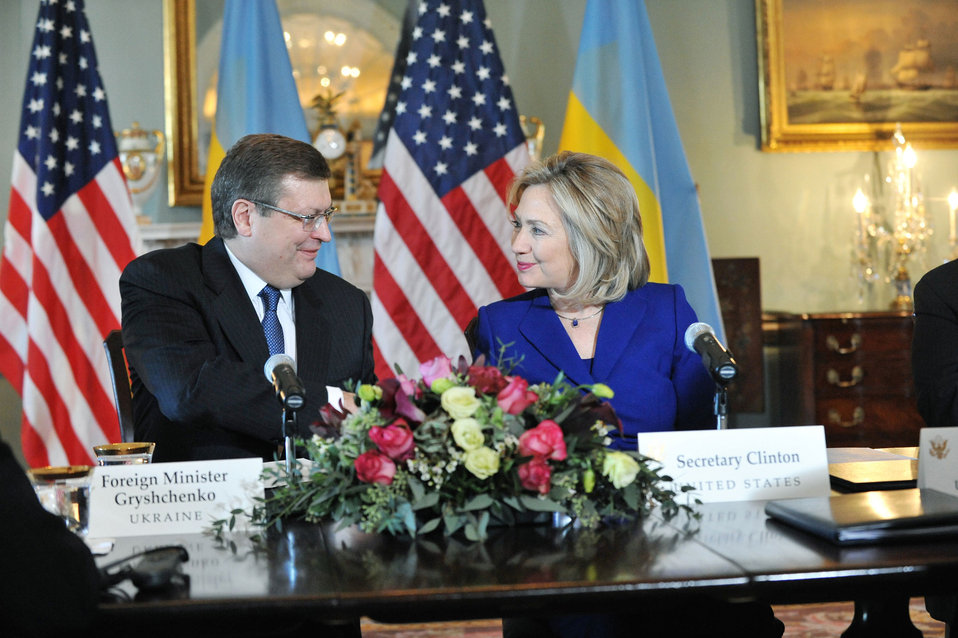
Secretary Clinton and Ukrainian Foreign Minister Gryshchenko Sign a Memorandum of Understanding on Trafficking in Persons

U.S. Secretary of State Hillary Rodham Clinton and Ukrainian Foreign Minister Gryshchenko sign a strategic partnership memorandum of understanding on trafficking in persons at the U.S. Department of State in Washington, D.C., on February 15, 2011.